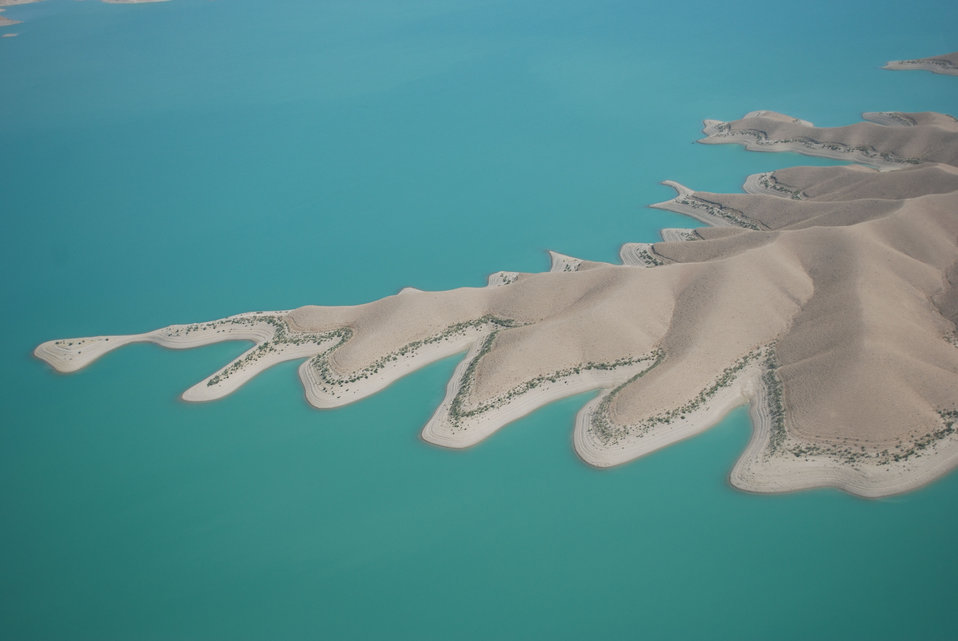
'On the Road' in Kandahar